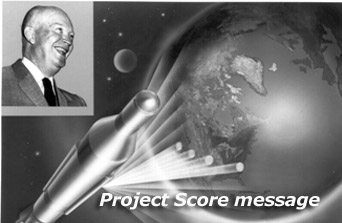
Project Score

On Dec. 18, 1958, the Air Force placed in orbit the first artificial communications satellite, a Project Score relay vehicle integral with the four-ton Atlas launcher. The next day, the satellite broadcast a taped recording of President Dwight D. Eisenhower's Christmas message--the first time a human voice had been heard from space.